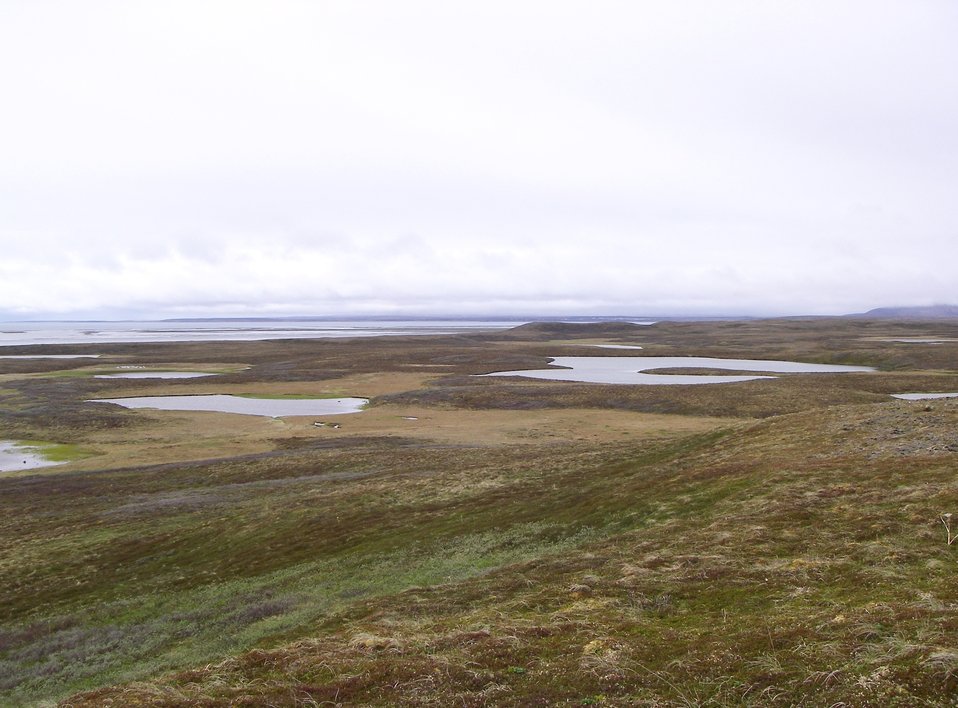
Izembek Wilderness

Wilderness north of Kinzarof Lagoon, Izembek National Wildlife Refuge
Photo by Kristine Sowl,
USFWS, Public Domain